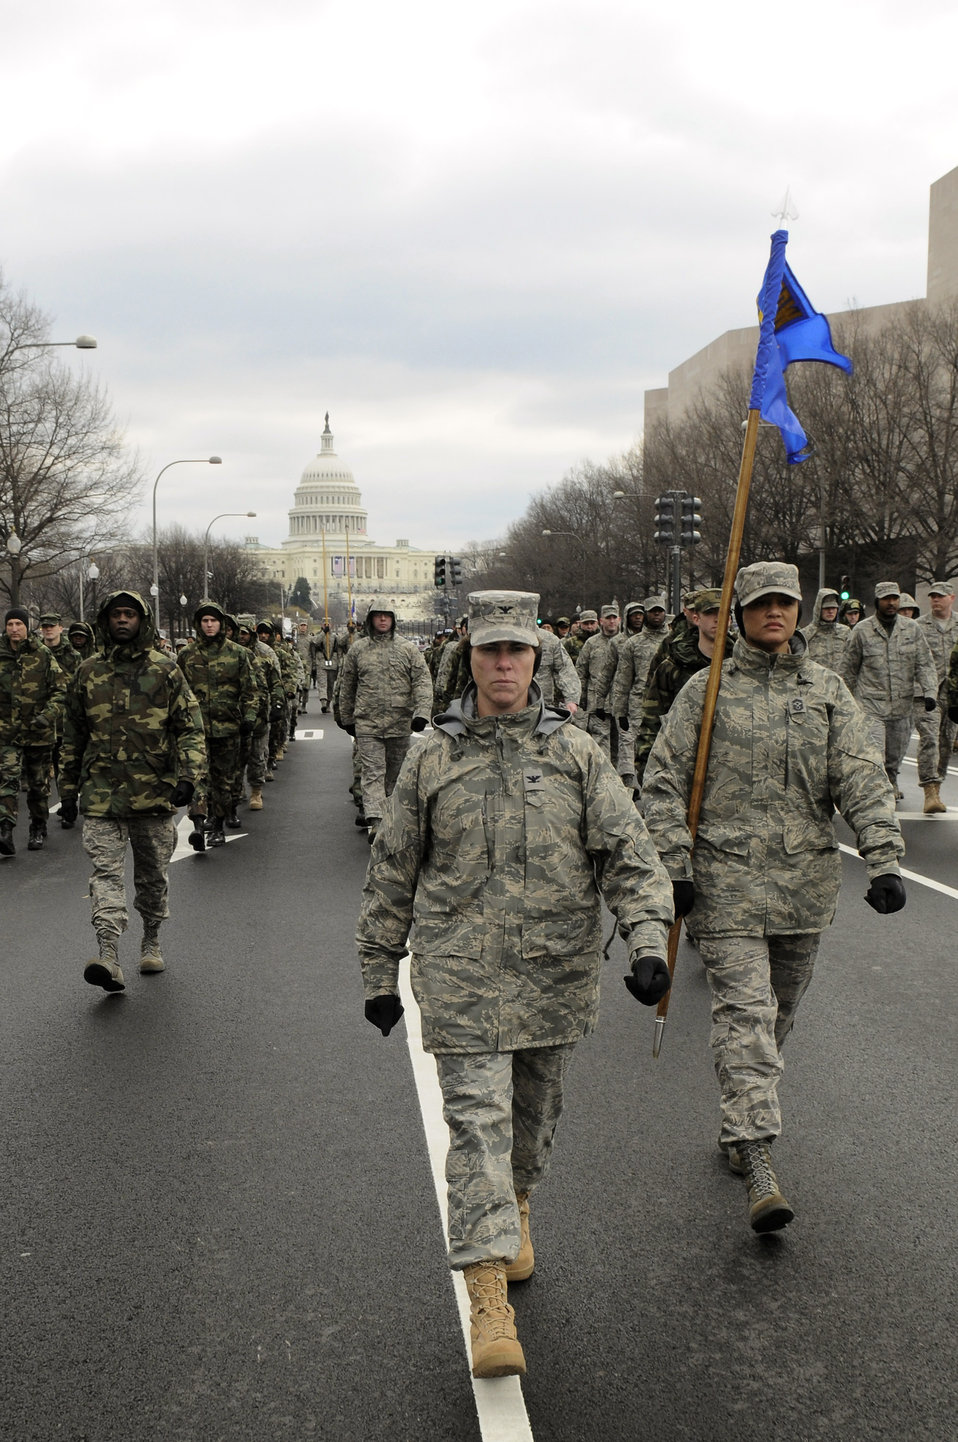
Practice makes perfect

Col. Elisabeth Borelli and Chief Master Sgt. Robin Johnson lead a flight of Airmen from the Air Force District of Washington down Constitution Avenue during a practice run of the inauguration parade for President-elect Barack Obama Jan. 11 in Washington, D.C. Colonel Borelli is the 11th Operations Group commander, and Chief Johnson is the 11th Wing command chief.